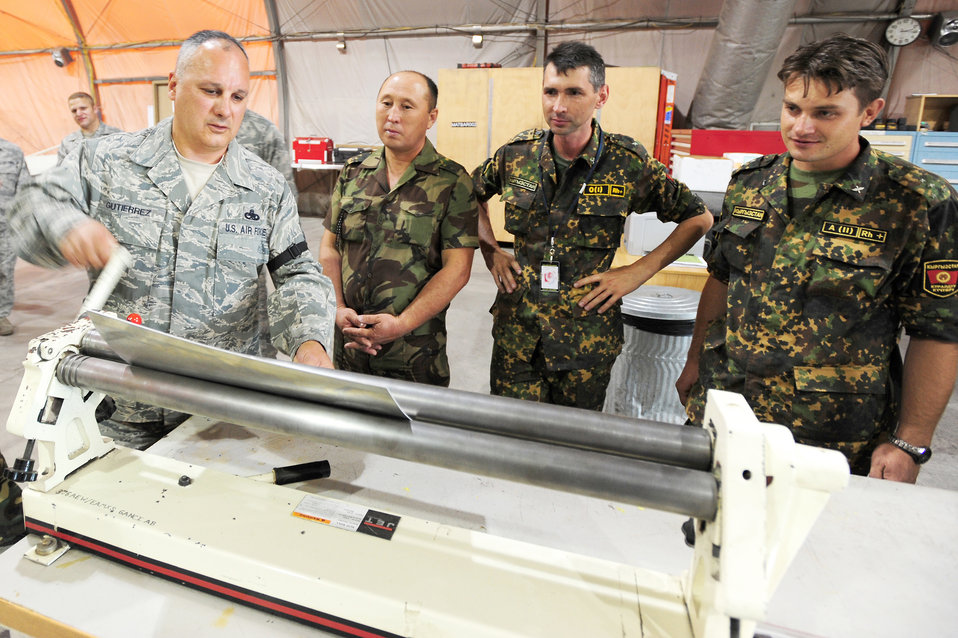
Kyrgyz ministry of defense team shadows Airmen, learns expeditionary maintenance

Master Sgt. Xavier Gutierrez demonstrates machinery to Kyrgyz ministry of defense officials Lt. Col. Vakhiddulla Toktakhunov, Maj. Andrey Mescheryakov, and Capt. Denis Satir, Aug. 25, 2009 during a visit to the Transit Center at Manas, Kyrgyzstan. The Kyrgyz ministry of defense got a firsthand look at maintenance facilities and a KC-135 Stratotanker while touring the Transit Center. Sergeant Gutierrez is the 376th Expeditionary Aircraft Maintenance Group sheet metal NCO in charge.